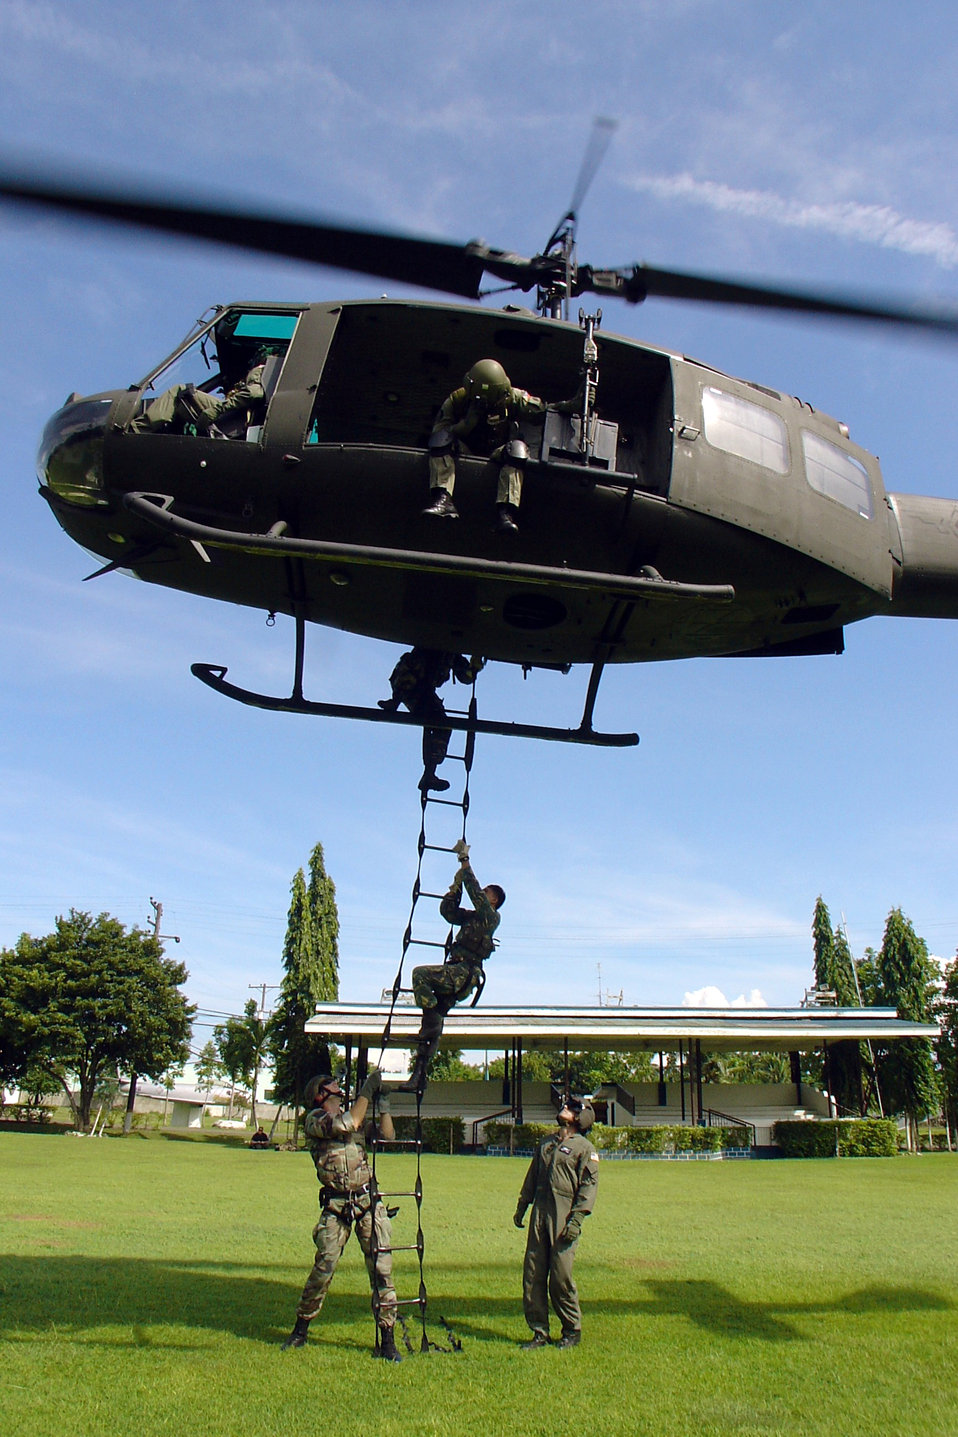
Training foreign forces in air force special ops

PHILIPPINES -- Airmen with the 6th Special Operations Squadron from Hurlburt Field, Fla., train Philippine airmen to use a rope ladder.